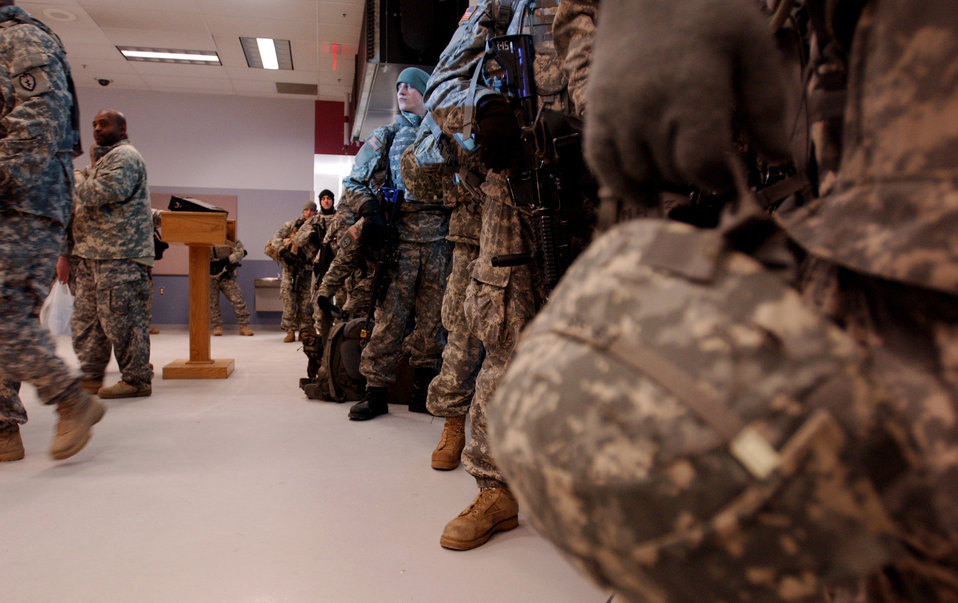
Air Force, Army forces join to support exercise

Soldiers from the Army's First Stryker Brigade at Fort Wainwright, Alaska, line up for roll call at the Joint Mobility Center at Eielson Air Force Base, Alaska, before boarding a C-17 Globemaster III to deploy to South Korea in support of a Foal Eagle exercise.